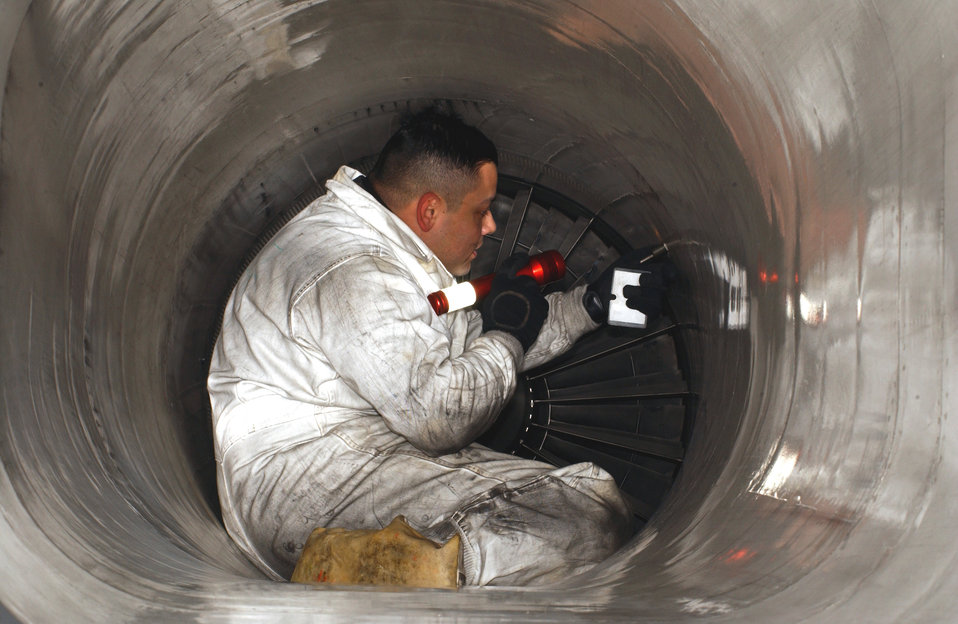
Tunnel vision

KWANG JU AIR BASE, South Korea -- Staff Sgt. Juan Trujillo inspects an F-15 Eagle jet intake following the 18th Air Maintenace Squadron's arrival here for a show-of-force exercise. Sergeant Trujillo is an aerospace propulsion craftsman with the 18th AMS.